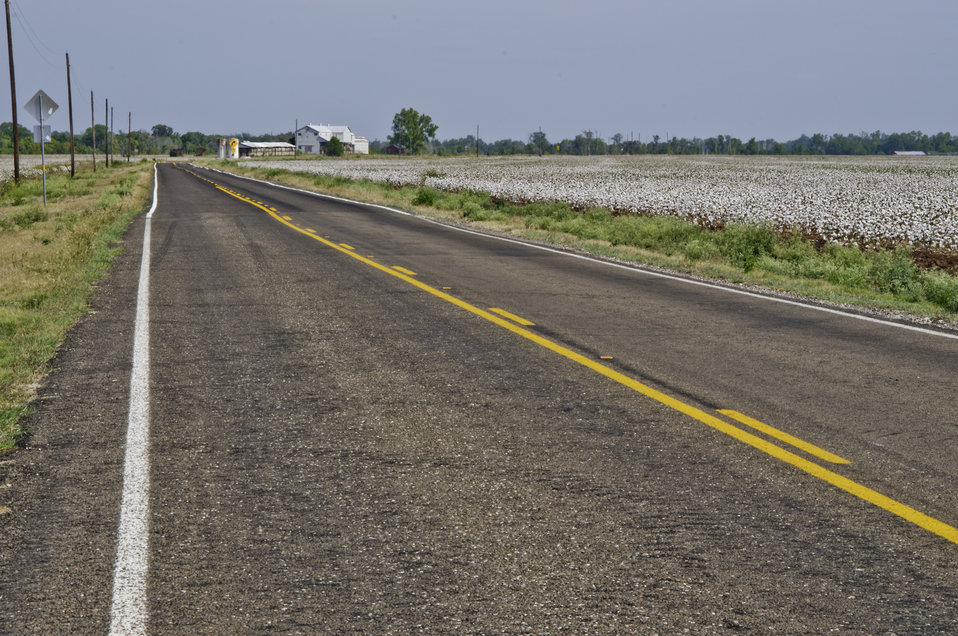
Dry Land cotton grows on a farm in Navasota, TX on Aug. 23, 2013.